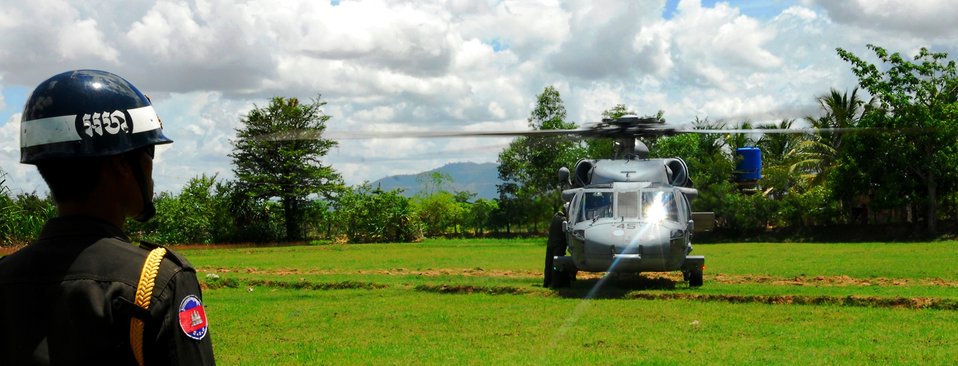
A Cambodian guard secures a helicopter landing zone as a Helicopter Combat Squadron 23 “Wild Cards” crewmember helps passengers board an MH-60S Knighthawk helicopter after completing a medical civic action program (MEDCAP) at Veal Ang Popel Clinic in Kampong Spue, Cambodia, on June 25, 2010.